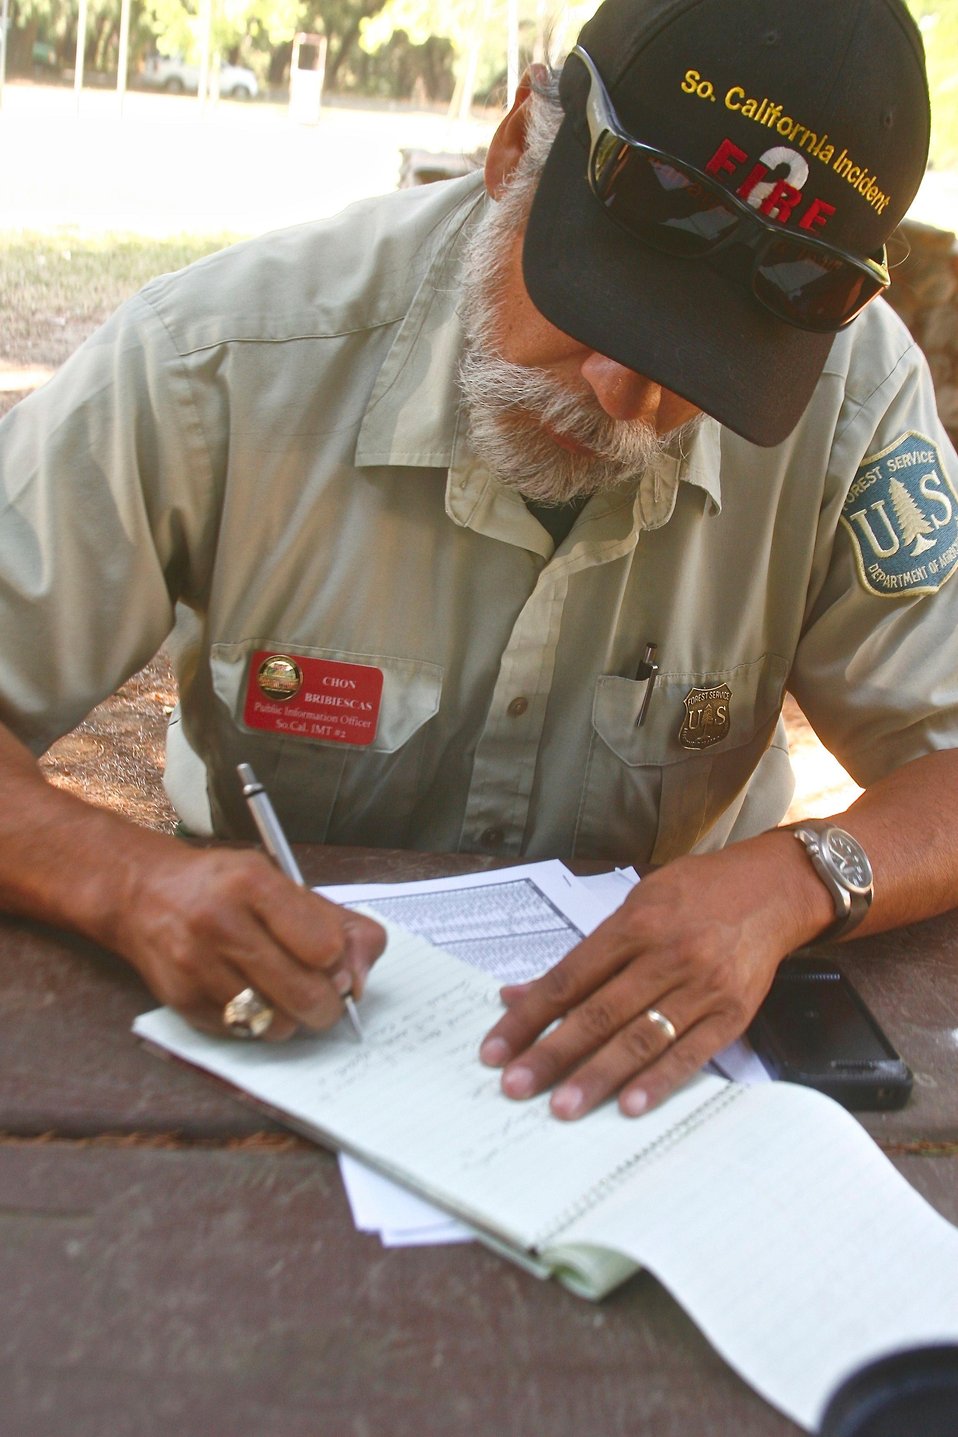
An information officer takes notes at briefing on the Corral Complex Fire. The Corral Complex Fire in the Six Rivers National Forest near the Trinity Alps Wilderness area in California began on Aug. 10, 2013 by lightning and has consumed approximately 12,272 acres and is 67% contained.